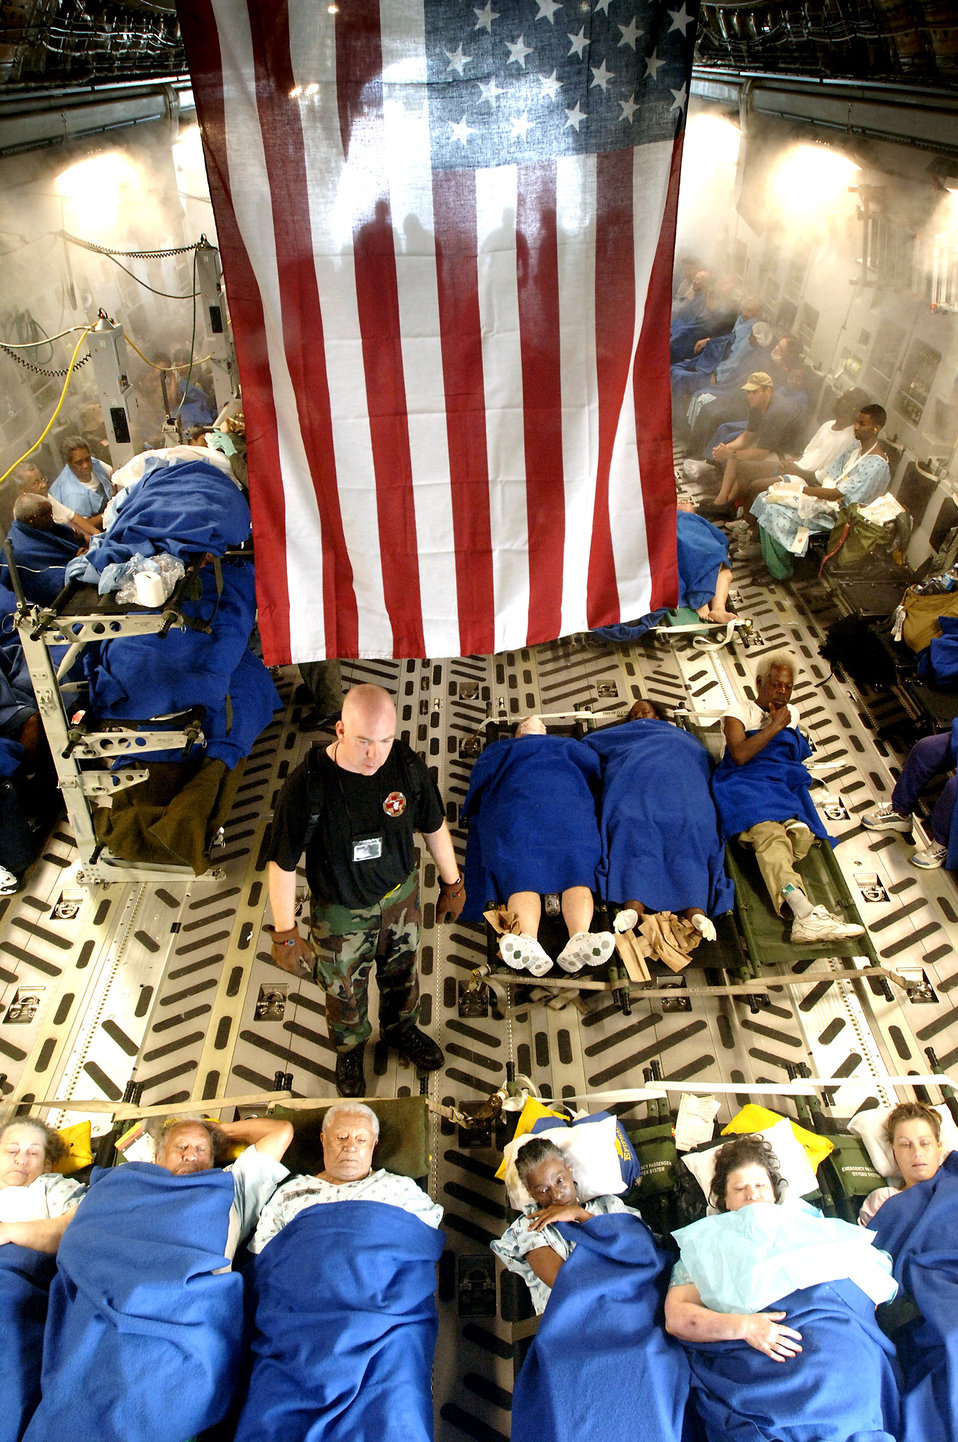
Air Force evacuates the sick and wounded

NEW ORLEANS -- Capt. Gary Hardy helps prepare sick and injured people for a flight aboard a C-17 Globemaster III. They are being evacuated from the devastation left by Hurricane Katrina to Dobbins Air Force Base, Ga. Captain Hardy a flight nurse with the 43rd Aeromedical Evacuation Squadron, at Pope AFB, N.C., and other Air Force Critical Care Aeromedical Teams have cared for thousands of evacuees. The aircraft and flight crew are from the 446th Airlift Wing at McChord Air Force Base, Wash.